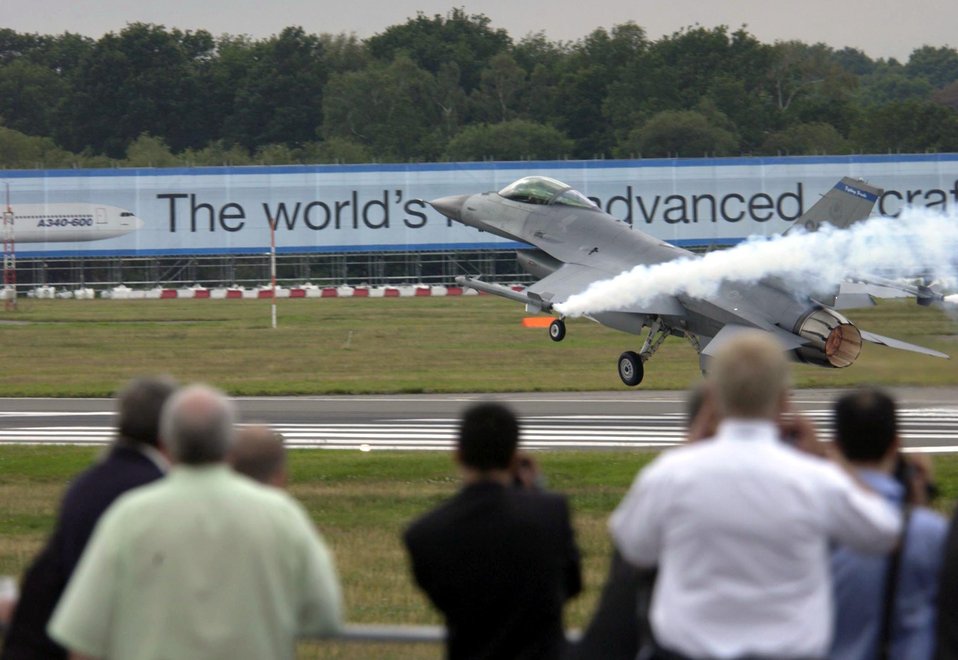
Jolly good show!

FARNBOROUGH, England -- A 48th Fighter Squadron F-16 Fighting Falcon pilot from Spangdahlem Air Base, Germany, demonstrates his aircraft's capability during the Farnborough International Airshow on July 21. The seven-day airshow ends July 25.